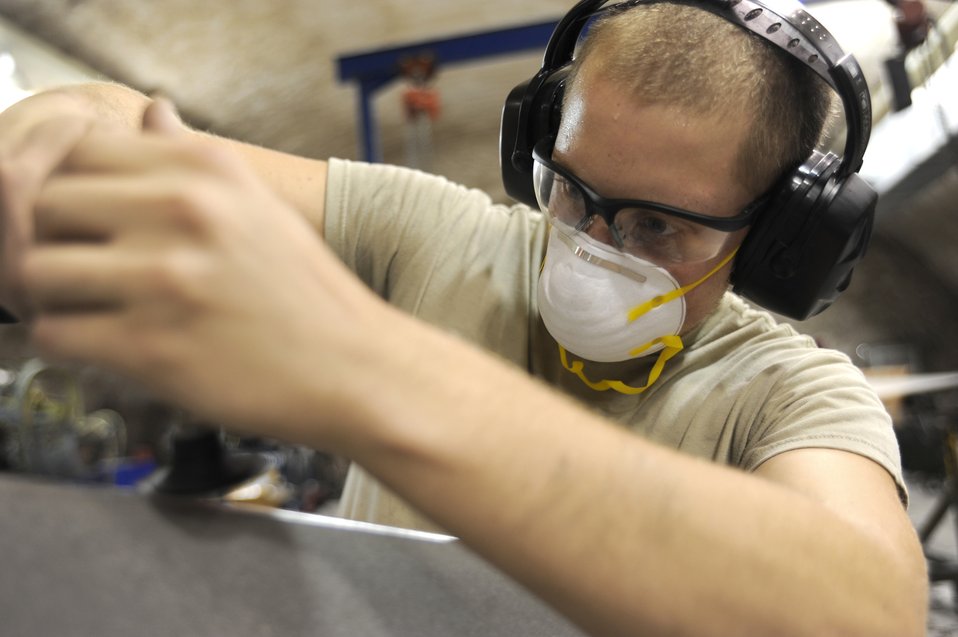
C-130 propeller blades

Senior Airman Corey Sites works on C-130 Hercules propeller blades Aug. 30, 2010, at a base in Southwest Asia. Airman Sites is a jet engine mechanic with the 379th Expeditionary Maintenance Squadron and is deployed from Hurlburt Field, Fla.